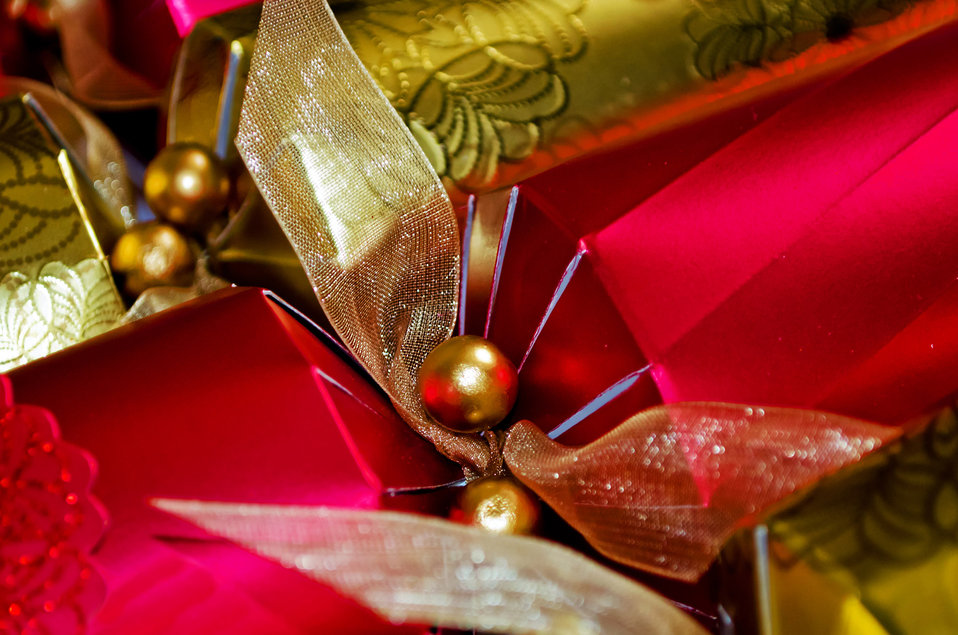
Christmas crackers.